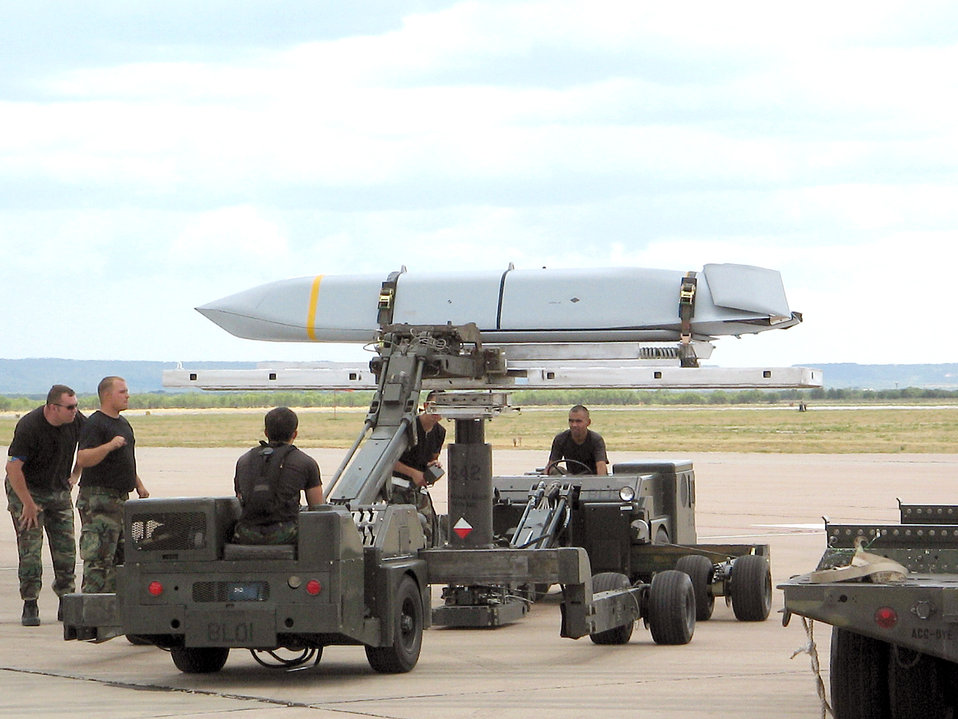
Dyess AFB demonstrates B-1B's upgrades, combat capabilities

DYESS AIR FORCE BASE, Texas -- Airmen here prepare a Joint Air-to-Surface Standoff Missile to be loaded onto a B-1B Lancer. The 7th Bomb Wing here became the first unit to achieve initial operational capability of the JASSM cruise missile Aug. 18, which means the missile is able to be used in combat operations. The JASSM, or AGM-158A, is an air-to-surface, single warhead self-propelled missile.